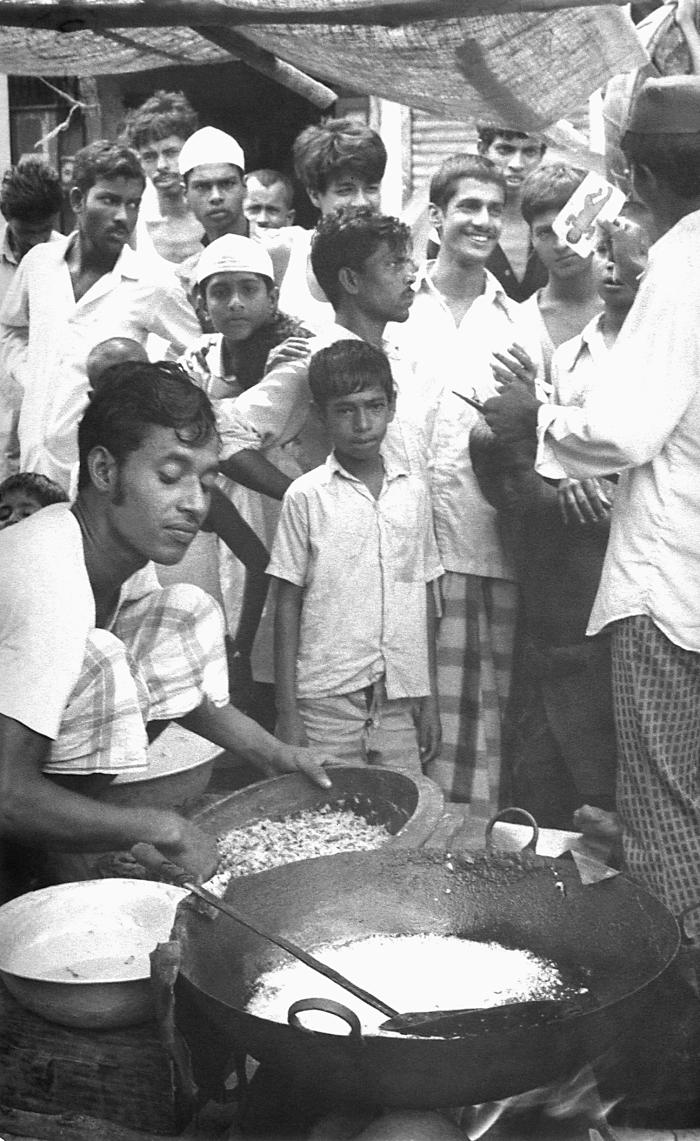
This 1975 photograph depicted a community smallpox eradication team volunteer as he was questioning members of a market crowd about the possible presence of smallpox cases in their community. If, indeed, a case was reported, from no matter the source, it was investigated fully, and if confirmed as a smallpox case, a reward was paid to the informant, no matter the age, and it was subsequently entered into the 'Containment Book'. The Containment Book was a ledger, which recorded all of the names of anyone living in, or within one half of a mile from a smallpox case, and subsequently all those listed were vaccinated against smallpox. Those vaccinated were followed until a 'successful' vaccination was observed. Periodic surveys showed that by the end of the program, 80% of the public knew about the cash award presented to those who had informed the public health authorities of a confirmed smallpox case.